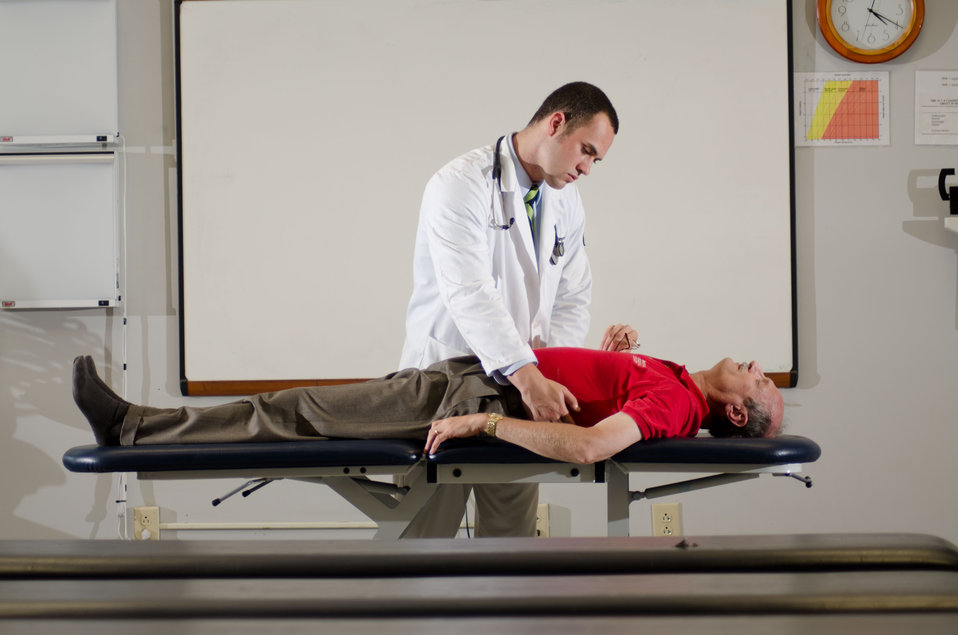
4th year medical student Cody Reynolds (standing) practices an examination of the lymphatic drainage of the head and chest of Associate Dean for Clinical Sciences and Health Policy Fellow Dr. Randy Litman, DO, at University of Pikeville Kentucky College of Osteopathic Medicine (UP-KYCOM), Pikeville, KY on Tuesday, July 12, 2011. The small size of this lab forces classes to be split, extending the school day and making the instructional content inconsistent between the split classes.
Dr. Reynolds will be in the first class to graduate from (but not study in) the new Coal Building, to be finished in 2012. The building is part of the $25 million expansion project at UP-KYCOM. The project will provide the undergraduate college with a new educational facility and an expanded clinical skills center. The nine-story structure is part of the new facility that will include two lecture halls, a gross anatomy lab, two research labs, offices, small group classrooms and student study space. A clinical skills training and evaluation center that will house 12 specially equipped examination rooms will be within the building and serve as training and testing centers for students in programs using standardized patients and high-fidelity robotic patient simulators. An expanded osteopathic manipulative medicine lab and clinic will provide learning opportunities, as well as housing UP-KYCOM’s free community clinic, which will be easy to reach from the sidewalk. Plans for the building also include a new cafeteria for the campus community. 'We are embarking on a vital project that will greatly enhance the excellent medical education our student doctors receive,' said Pikeville College President Paul E. Patton. 'At the same time, it will allow us to expand the current class size from 75 to 125 students, increasing the total enrollment from 300 to 500 students. The college initiated a capital construction campaign. In order to secure adequate funding, the board of trustees authorized borrowing up to $25 million from the USDA Rural Development. Commitments of $1.6 million have been secured through gifts and pledges, including $500,000 from the James Graham Brown Foundation. Significant grants have also been received from the Appalachian Regional Commission, and the U.S. Small Business Administration.